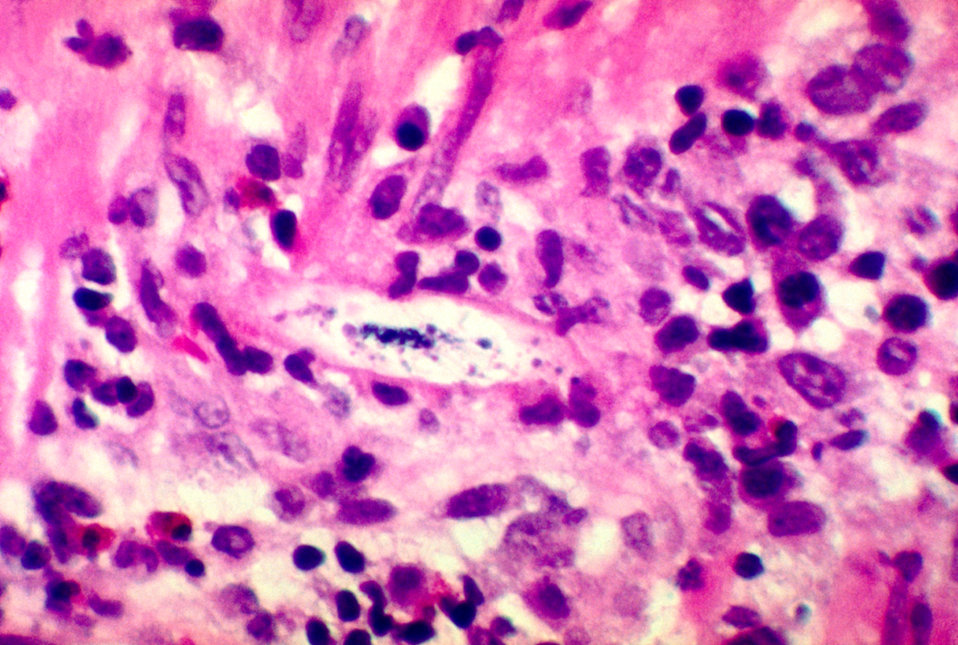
This micrograph depicts the histopathologic changes caused by Strongyloides stercoralis embedded in the intestinal wall.